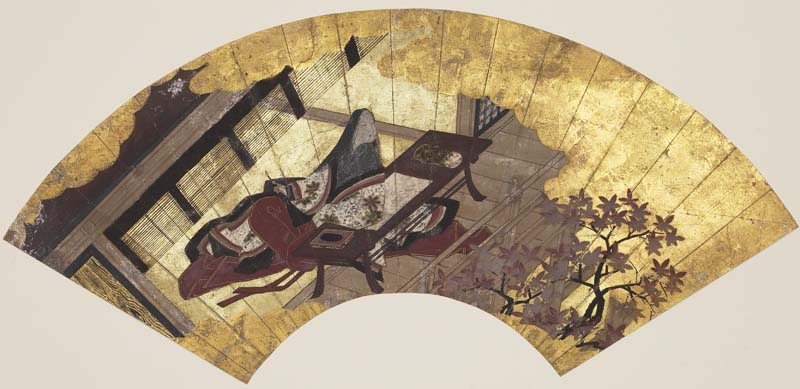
Lady Murasaki, anonymous ink, color and gold paper fan, 17th century Japan (Edo period), Honolulu Academy of Arts